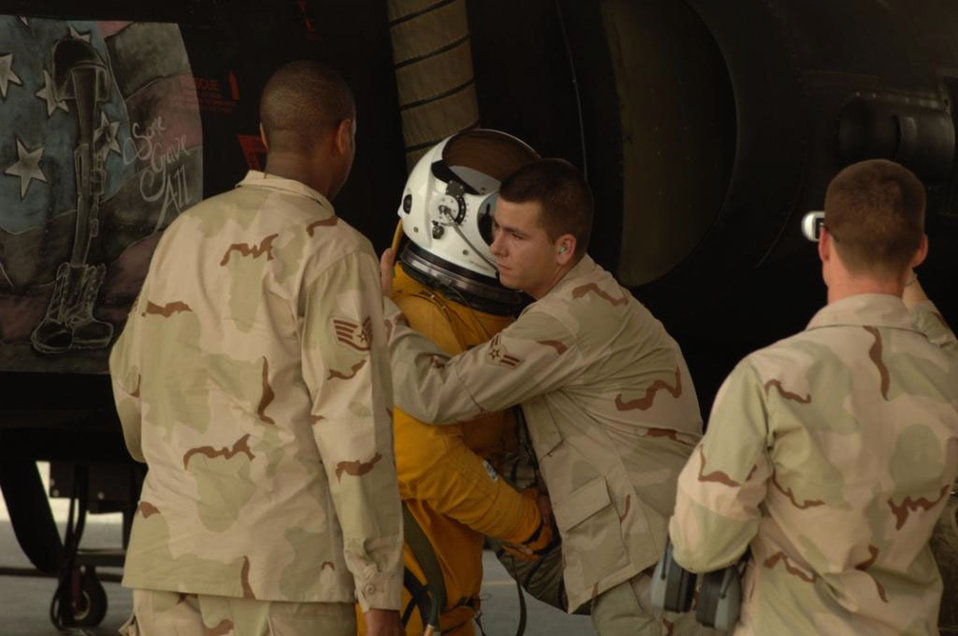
U-2 nose art honors fallen Soldier

A1C Alexander Zwilling hugs a pilot before he flies an Operation Enduring Freedom mission in an aircraft featuring chalk art honoring his late brother, a Soldier who was killed July 13, 2008, in Afghanistan.